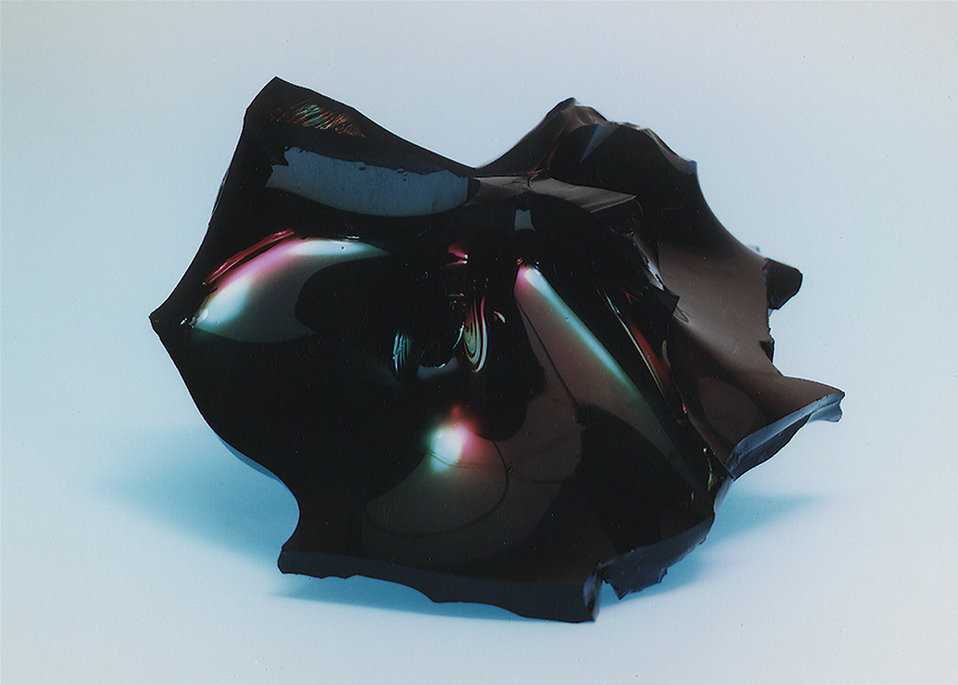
Vitrification technology is a practical and effective option for treating radioactive and hazardous chemical wastes.

Unlike other cleanup techniques, in situ vitrification does not require that the waste be excavated and transported for disposal. Thus, it is safe and cost-effective. In situ vitrification uses electric power to melt soil and rock to immobilize hazardous wastes. The mass cools into glasslike blocks that will hold materials safety for geologic time periods.